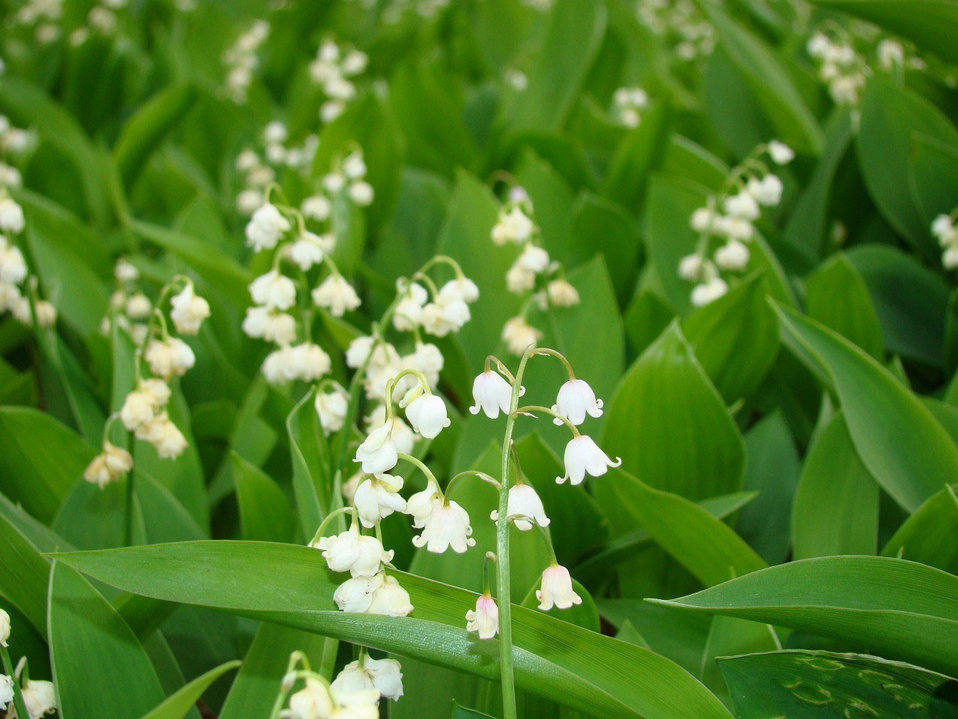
May bells

Spring lily of the valley flowers.